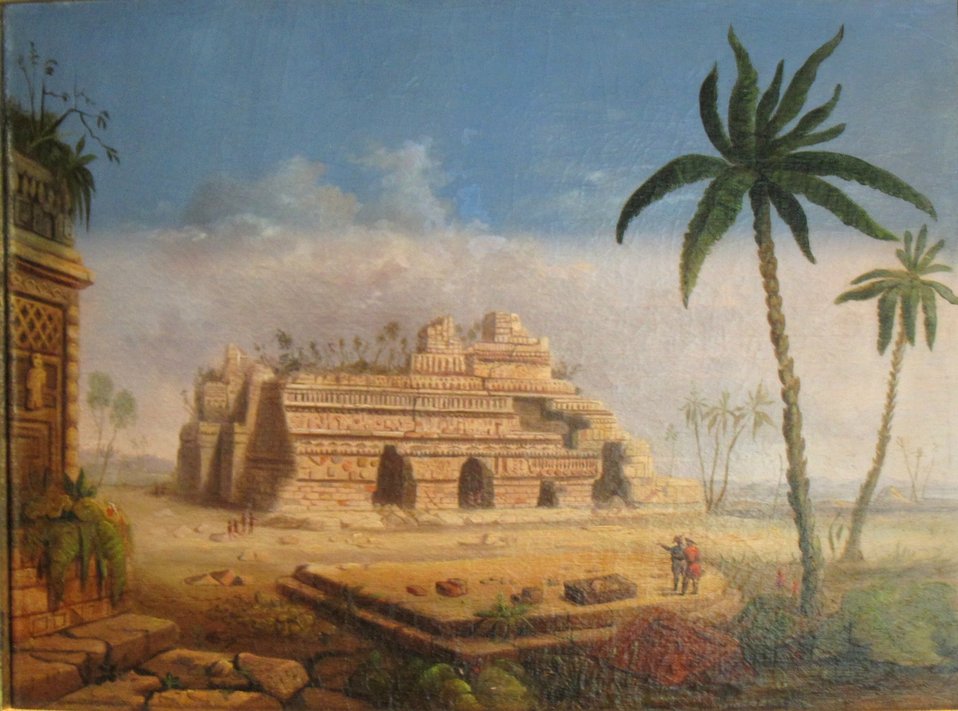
Myan Ruins, Yucatan, oil on canvas painting by Robert Scott Duncanson, 1848, Dayton Art Institute